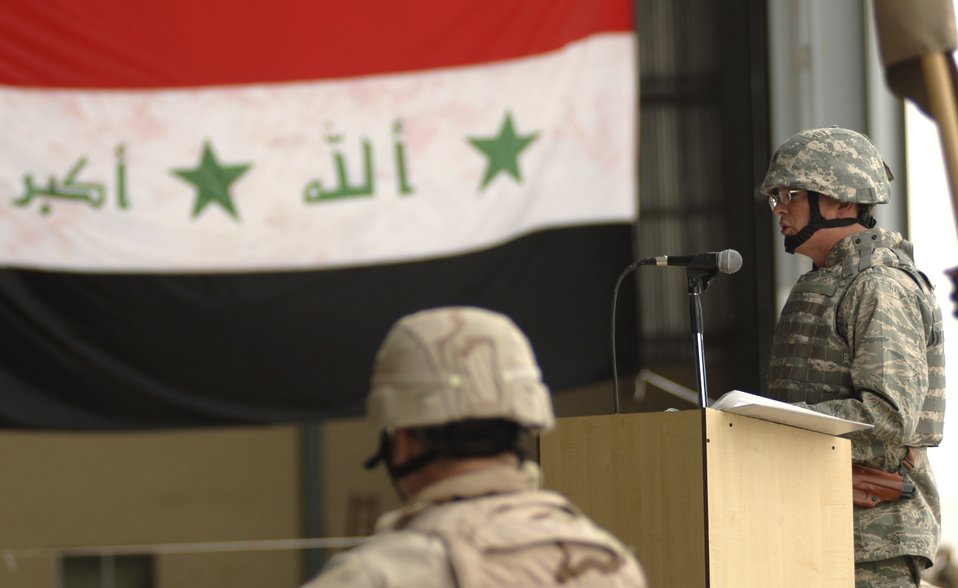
Operation Iraqi Freedom

Baghdad, Iraq -- Brig. Gen. Robert R. Allardice, commander of Coalition Air Force Transition Team, address a crowd of approximately 100 during the Unit Activation and Assumption of Command Ceremony for the 370th Air Expeditionary Advisory Group at the New Al Muthana Air Base April 22..